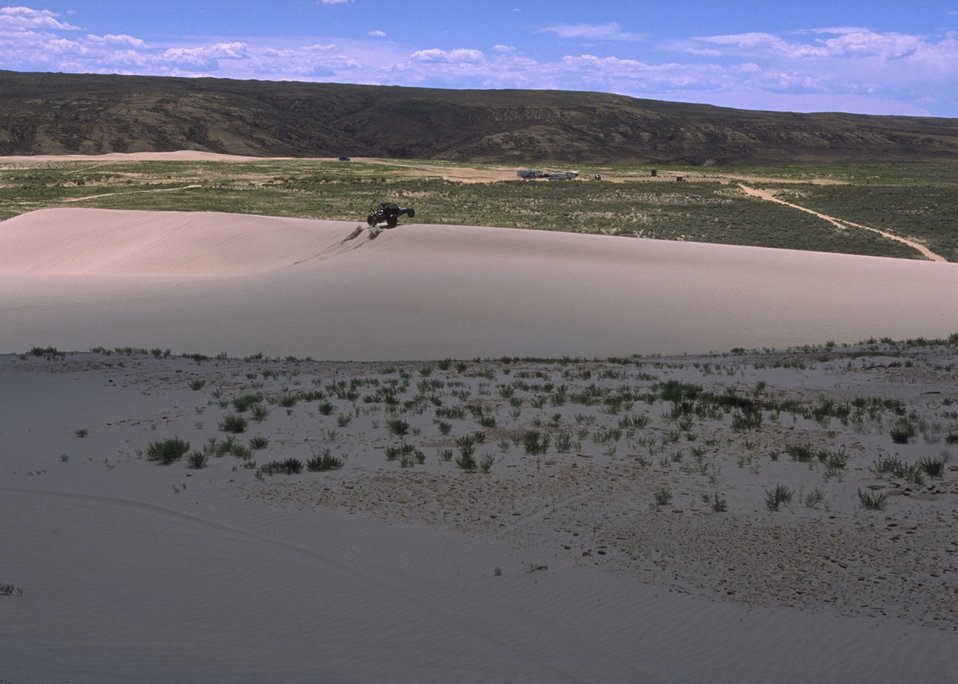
Sand Dunes OHV Area, Rock Springs Field Office.